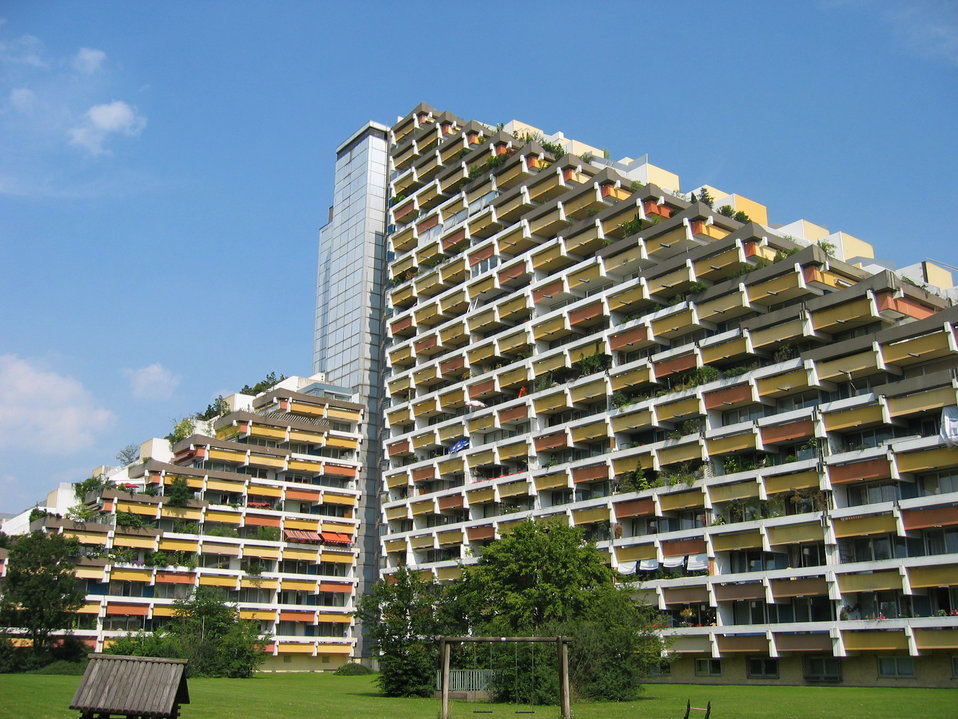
Deutsch: Das Pharao-Haus, Südseite, in München. Pharao-Haus (Pharao-Building), South Viewing, in Munich, Bavaria.